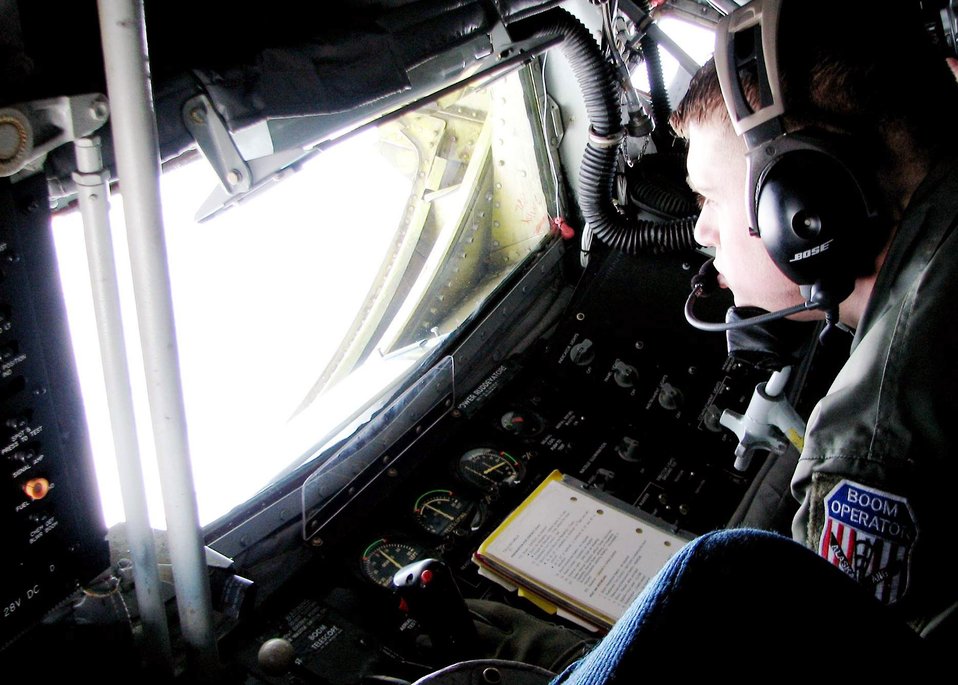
Alaska ANG KC-135s provide edge anytime, anywhere

Staff Sgt. Christian Willey handles the controls during a KC-135 Stratotanker aerial-refueling mission May 8 over Alaska. The flight was part of Northern Edge 2008, the largest military training exercise in Alaska, which began May 5 and concludes May 16. The Alaska Air National Guard's 168th Air Refueling Wing at Eielson Air Force Base, Alaska, performs daily refueling flights as part of the exercise. Sergeant Willey is a 168th ARW KC-135 boom operator.